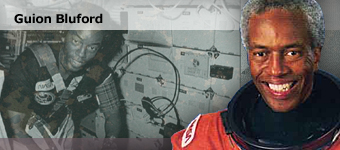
Col. Guion Bluford history spotlight graphic .